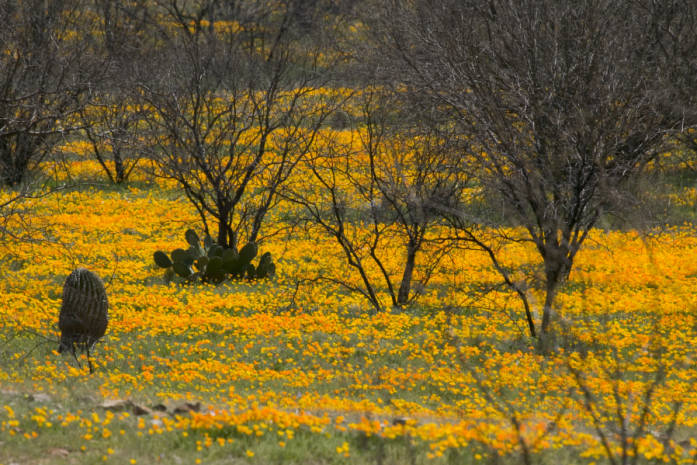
Mexican poppies

Buenos Aires National Wildlife Refuge, AZ